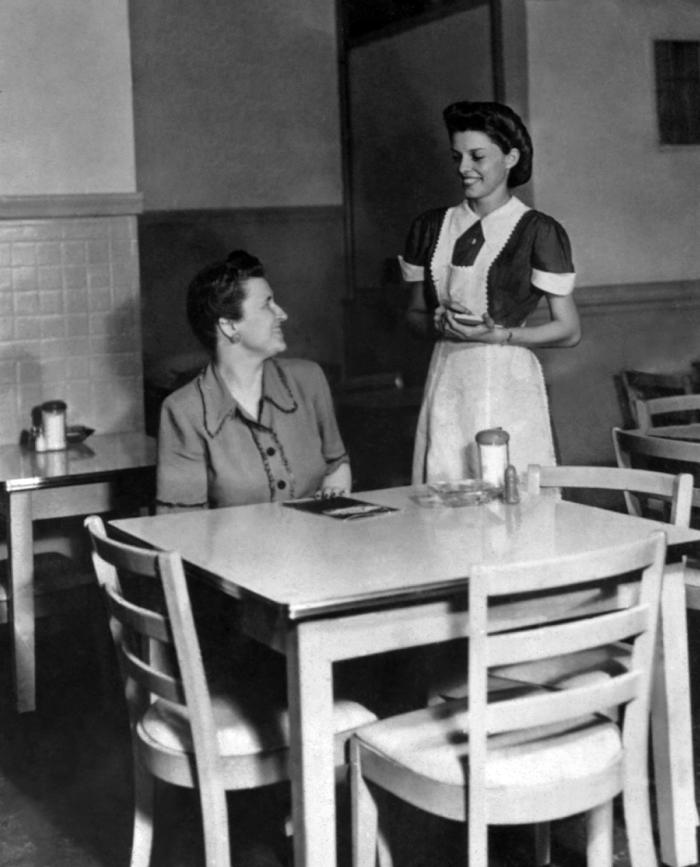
This historic 1950s image depicted a restaurant food server whose behavior is consistent with reducing the risk of transferring a communicable infection. The server was standing at an appropriate distance from the customer, and kept her hands far from her mouth during the interaction, for she might need to touch the table to retrieve the menu, etc. In these ways, the food server was minimizing the possibilities for disease transmission between herself and the customer.